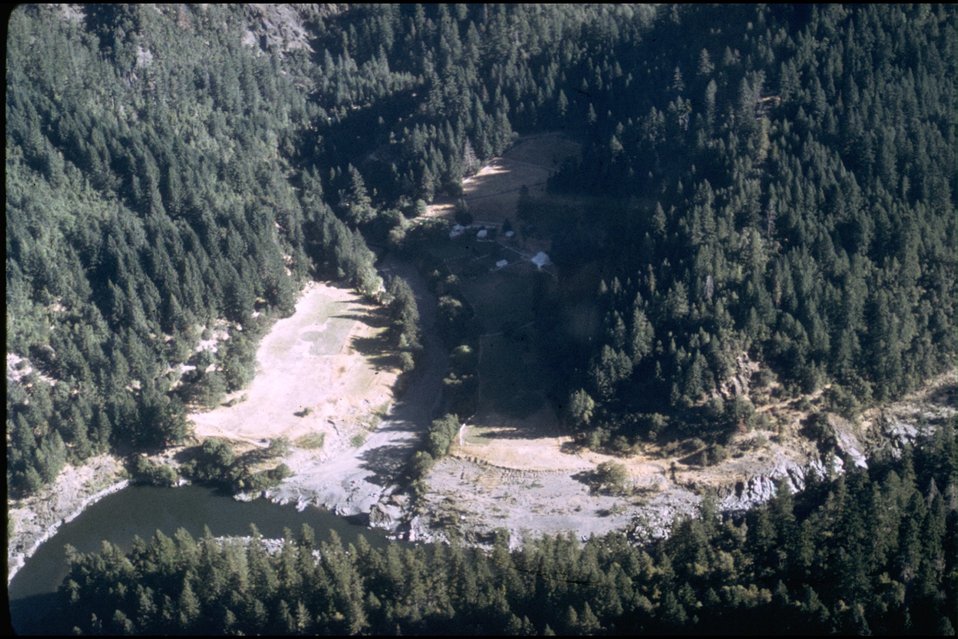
Rogue River; Rogue River Ranch - Mule Creek, aerial view.